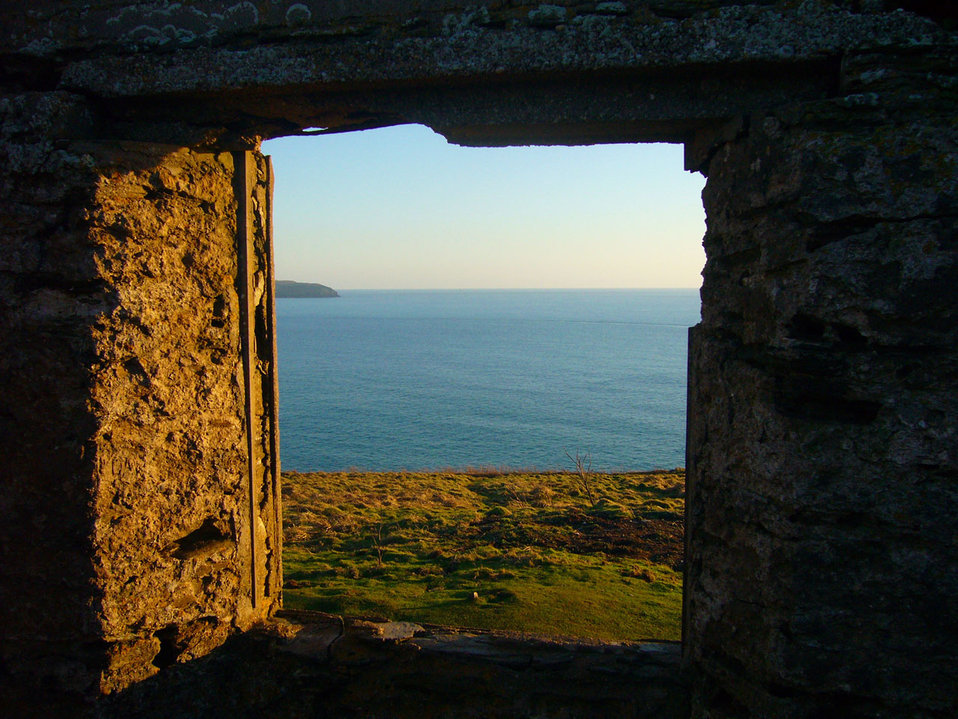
Sea

View of the window.